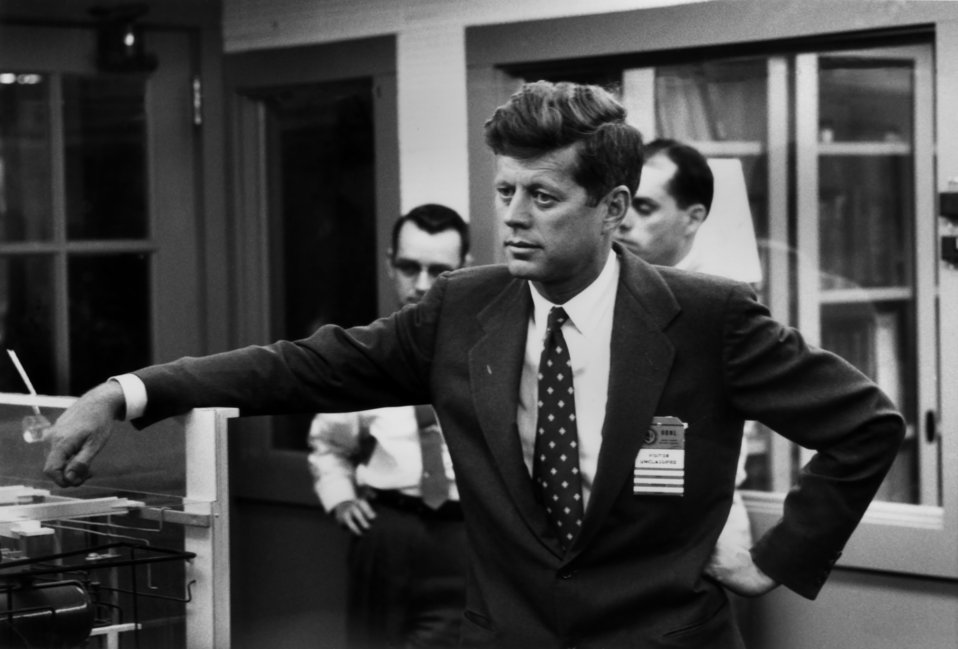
Sen. John F. Kennedy visting Oak Ridge

59-152-5 DOE photo by Ed Westcott

Sen. John F. Kennedy visting Oak Ridge National Lab. 2-24-1959